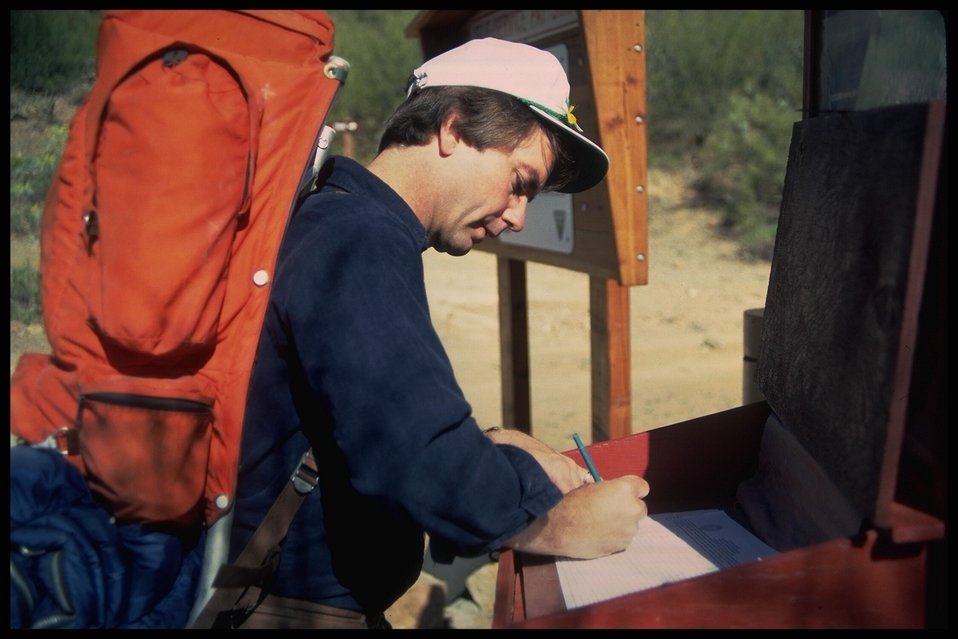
A backpacker signs in at one of Arizona's hiking/camping permitted areas on public land.